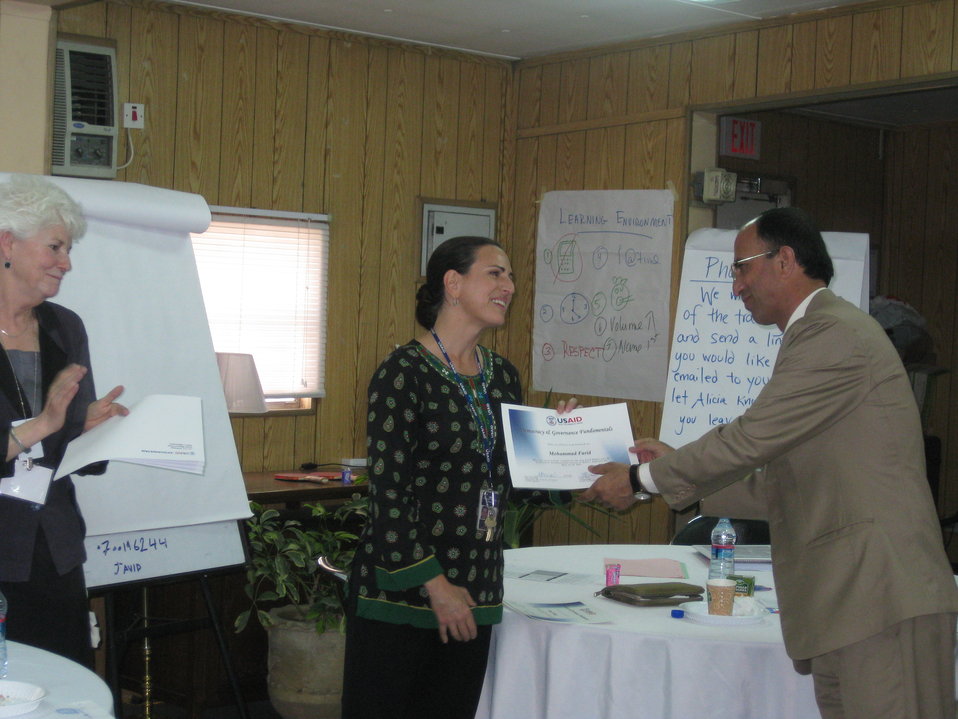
Afghan Youth Voices 069